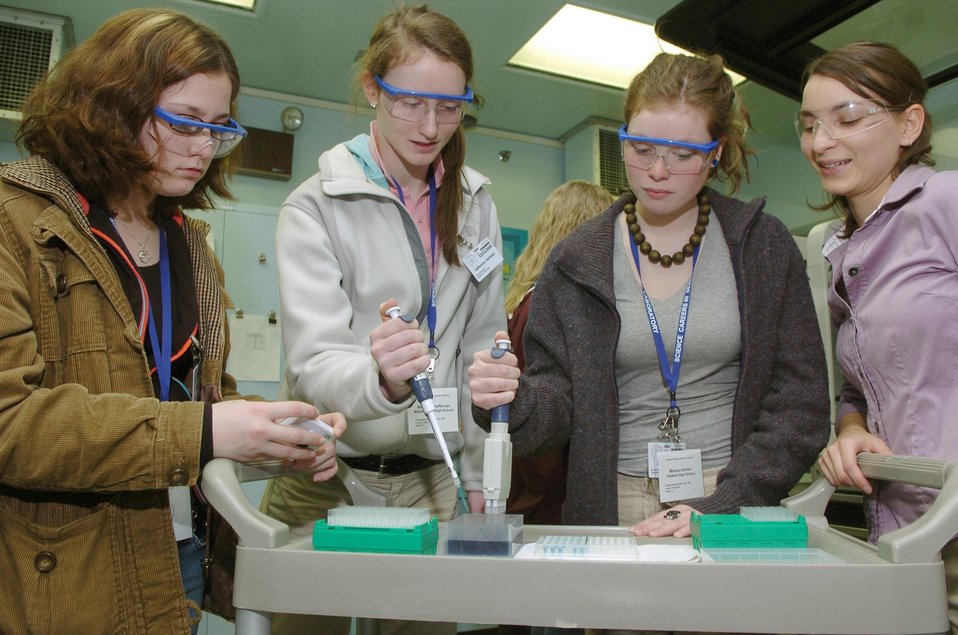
Students attending the Science Careers in Search of Women Conference at ANL get the opportunity to tour many labs, including biology, pictured here, chemistry, physics, computer science and engineering.

About 350 students from nearly 60 schools throughout the Chicago area will participate in the day-long conference. The goal is to encourage high school women to consider a career in science and technology. Science Careers in Search of Women puts students with scientists in various fields and provides an opportunity to spend the day interacting with positive female role models. Students participate in panel discussions with speakers from various scientific and engineering disciplines. The students also tour several labs at ANL including biology, chemistry, physics, computer science and engineering, as well as visit career booth exhibits.